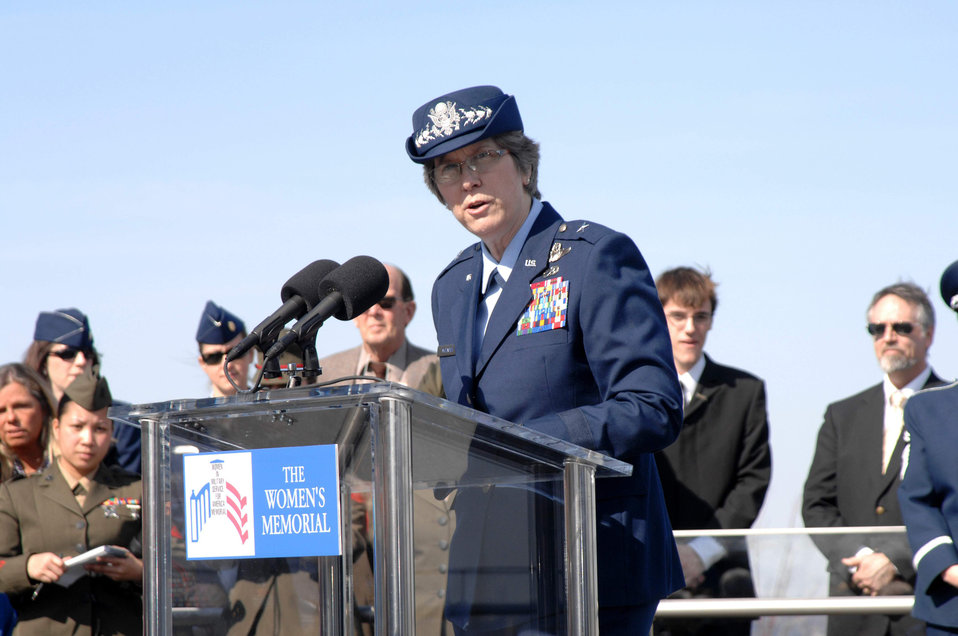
Female World War II pilots lay wreath at Air Force Memorial

Retired Brig. Gen. Linda K. McTague welcomes Women Airforce Service Pilots members and guests gathered at a wreath-laying ceremony March 9, 2010 in Arlington, Va., to honor the 38 WASP who lost their lives in the line of duty.